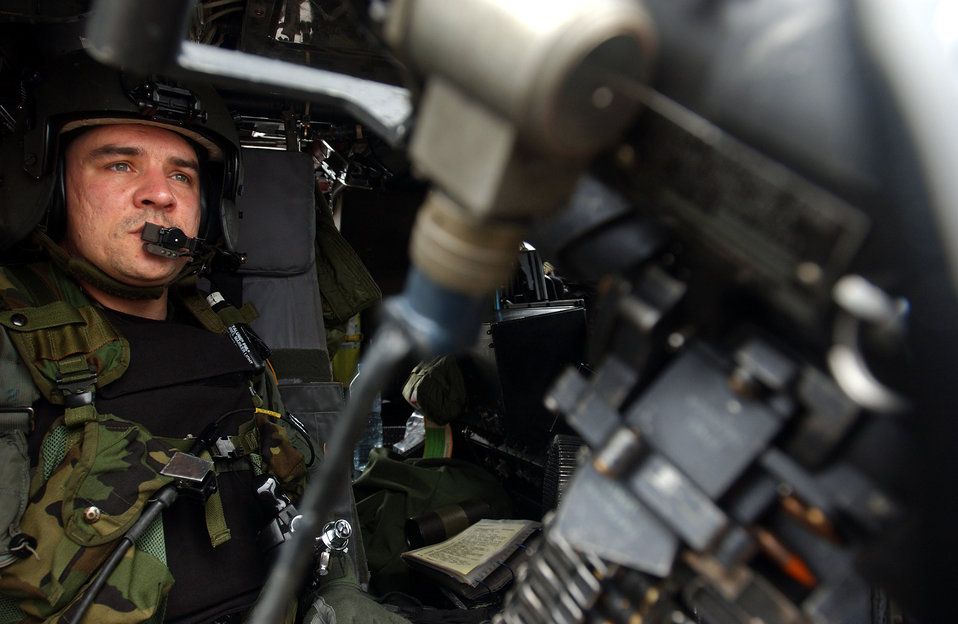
More support in Liberia

LUNGI, Sierra Leone -- Staff Sgt. Dennis Snyder mans a GAU-2 mini gun aboard a HH-60 Pave Hawk helicopter before an evacuation mission to the U.S. Embassy in Monrovia, Liberia on July 28. Snyder is a flight engineer with the 56th Rescue Squadron from Naval Air Station Keflavik, Iceland. The 398th Air Expeditionary Group is here to provide personnel recovery and emergency evacuation capability for the humanitarian assistance survey team and the fleet antiterrorism security team in Liberia.